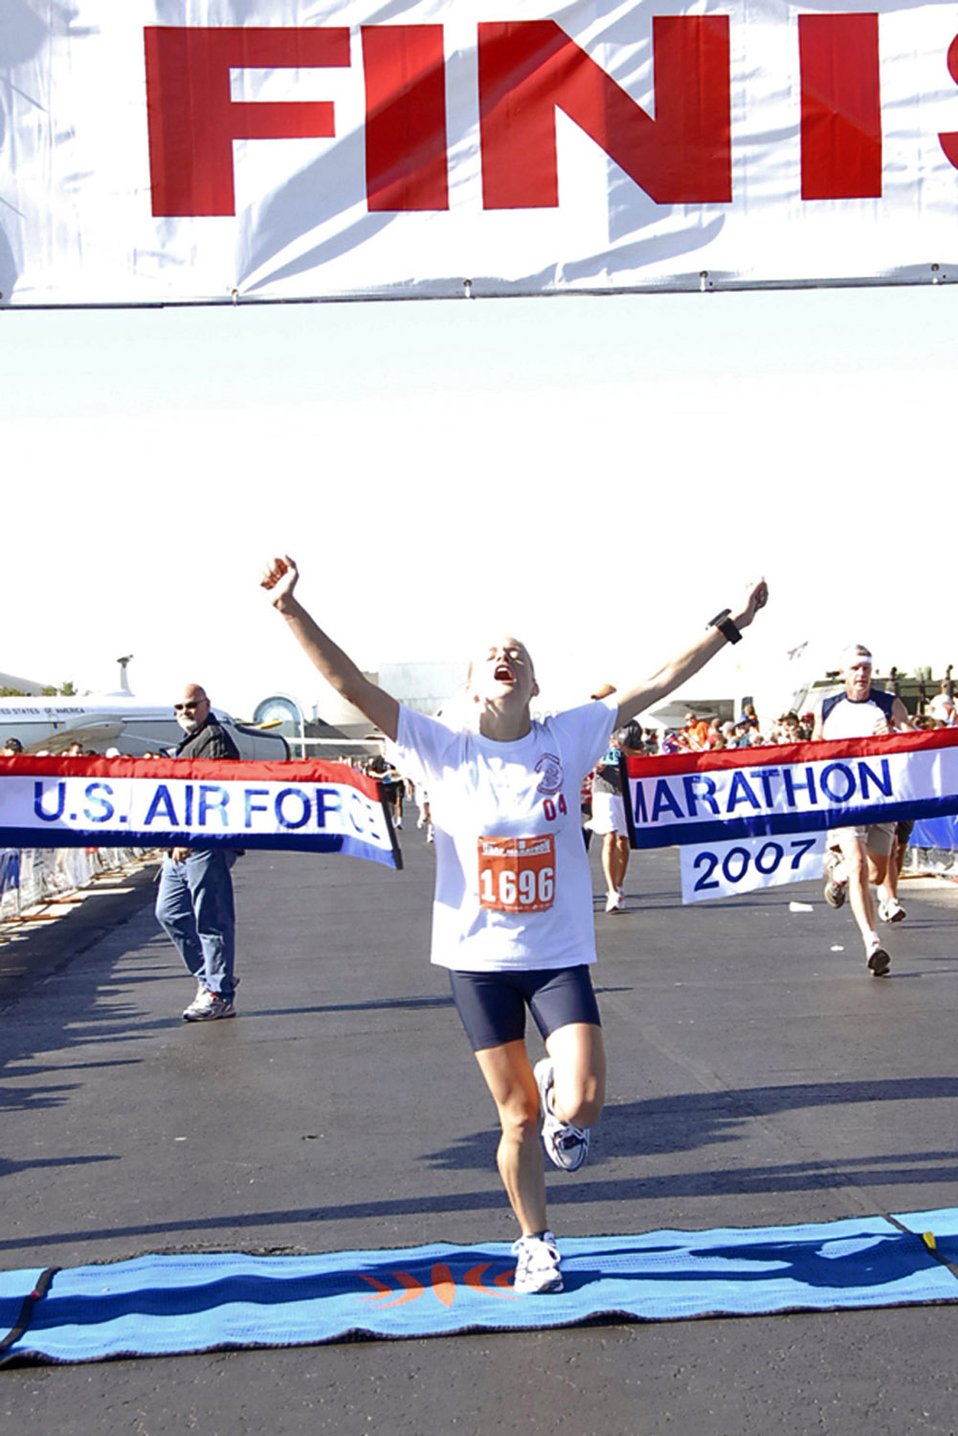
U.S. Air Force Marathon official results announced

Second Lt. Karissa Goodrich from Goodfellow Air Force Base, Texas, celebrates her victory as the top finishing overall female marathon runner at the U.S. Air Force Marathon Sept. 15 at Wright-Patterson Air Force Base, Ohio. Her time was 3:06:54. She was one of more than 6,300 runners participating in marathon events.